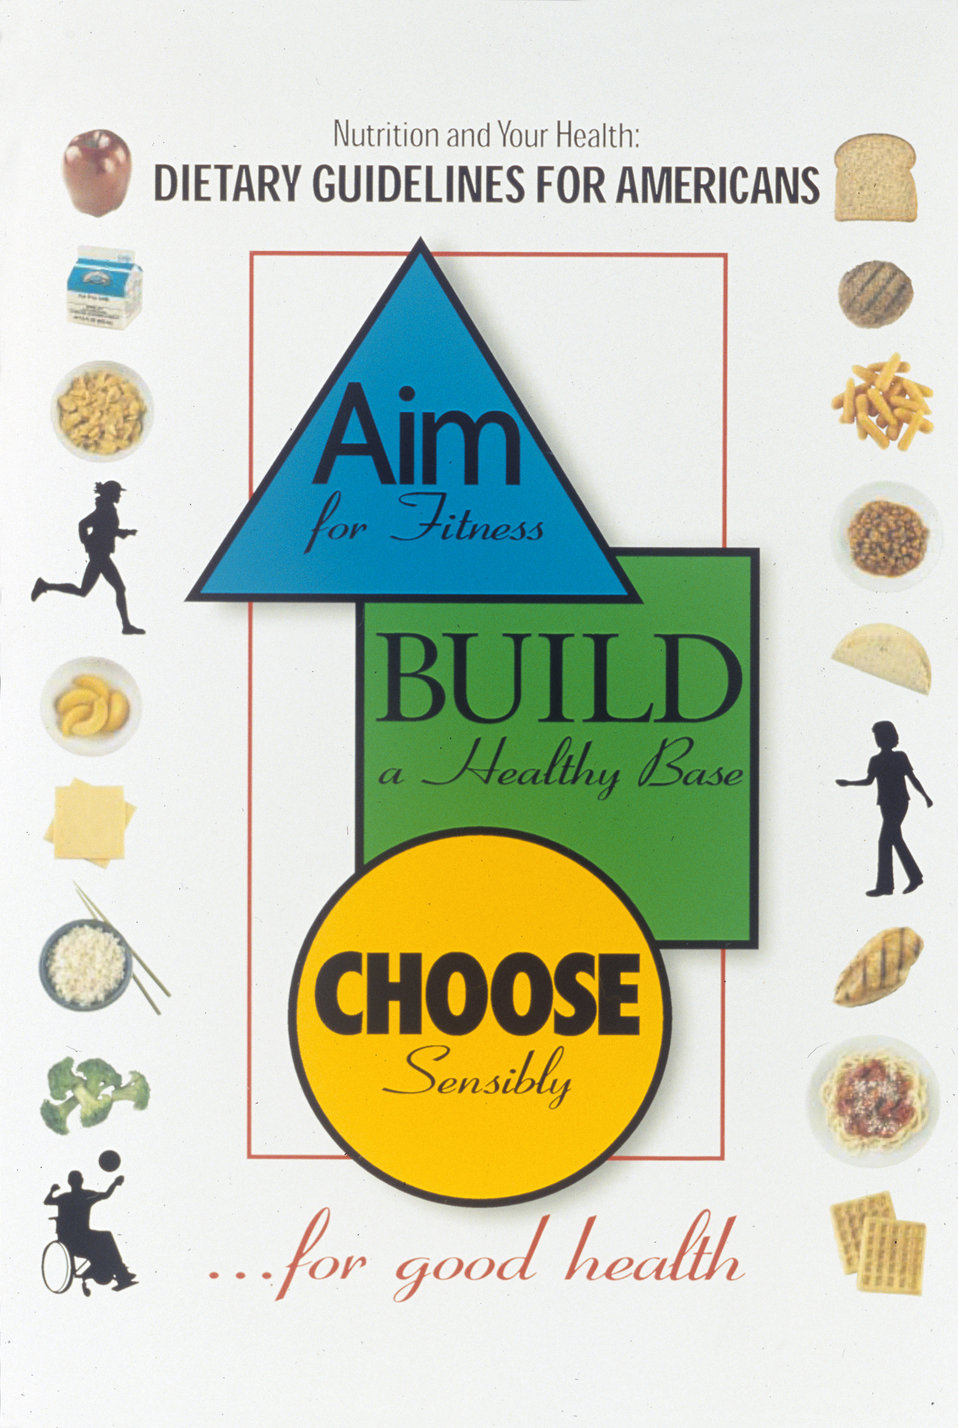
This the cover of the 2000 Dietary Guidelines for Americans produced by the Center for Nutrition Policy and Promotion Service (CNNP).